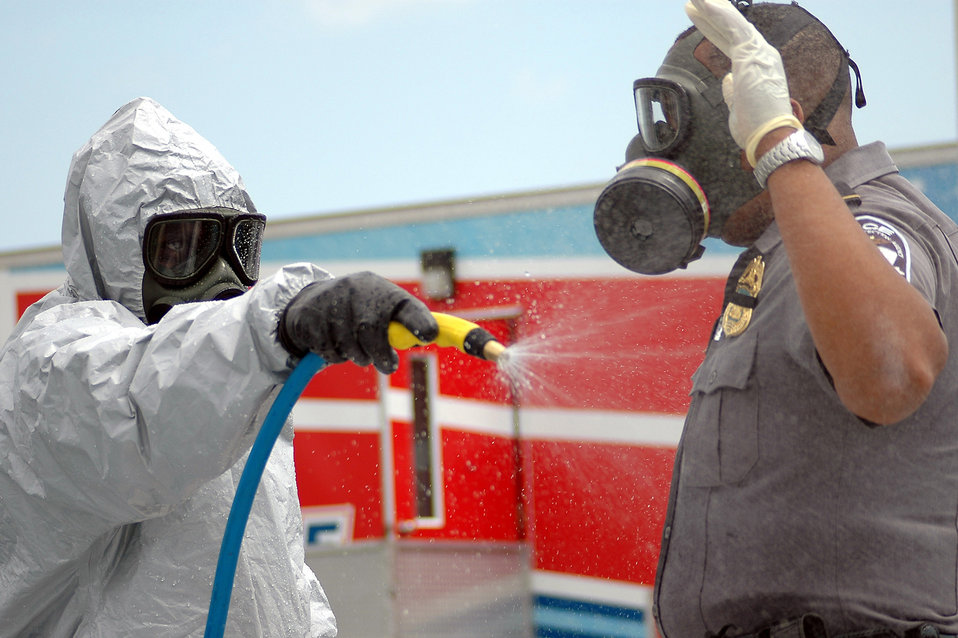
National Capitol Region first responders train for Pentagon disaster

A member of the Pentagon Force Protection Agency is decontaminated during an exercise at the Pentagon on Wednesday, May 17, 2006. During exercise Gallant Fox 06, officials from Washington D.C. area fire, emergency medical service, and police departments; military members; and members of the Pentagon Force Protection Agency participated in the exercise, which included decontamination and medical processing of victims of a simulated anthrax attack at the Pentagon.